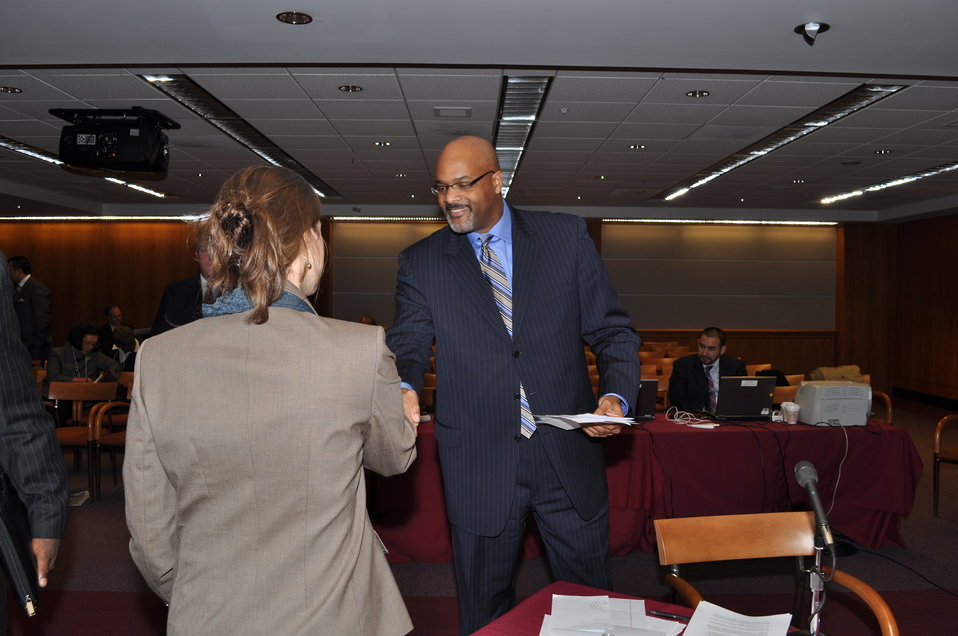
Capitalization Strategies

Workshop for small, minority and women owned businesses. Hosted by the Office of Communications Business Opportunities